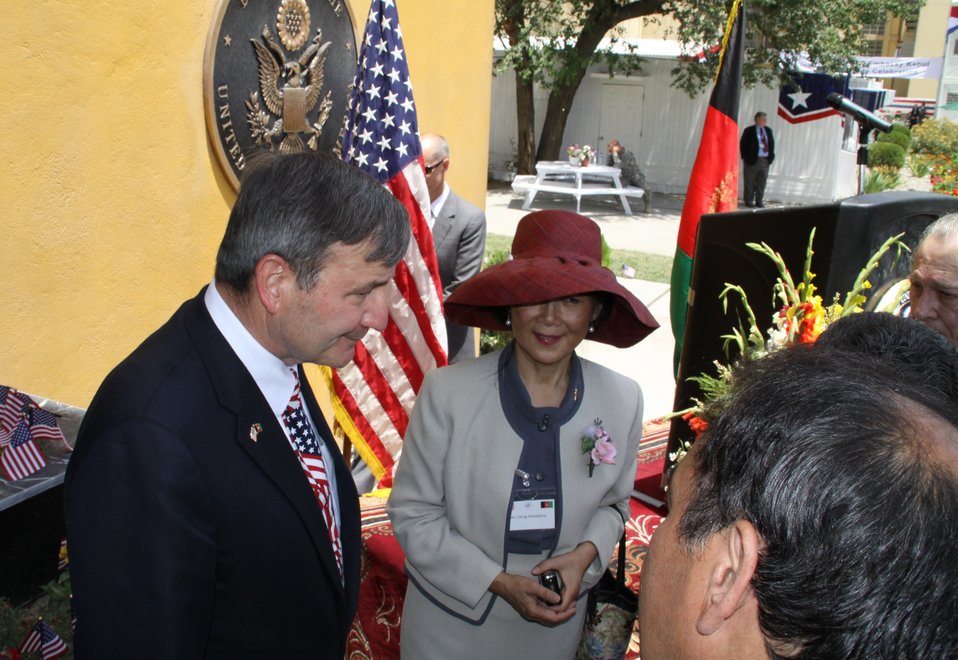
Kabul Official July 4th Celebration